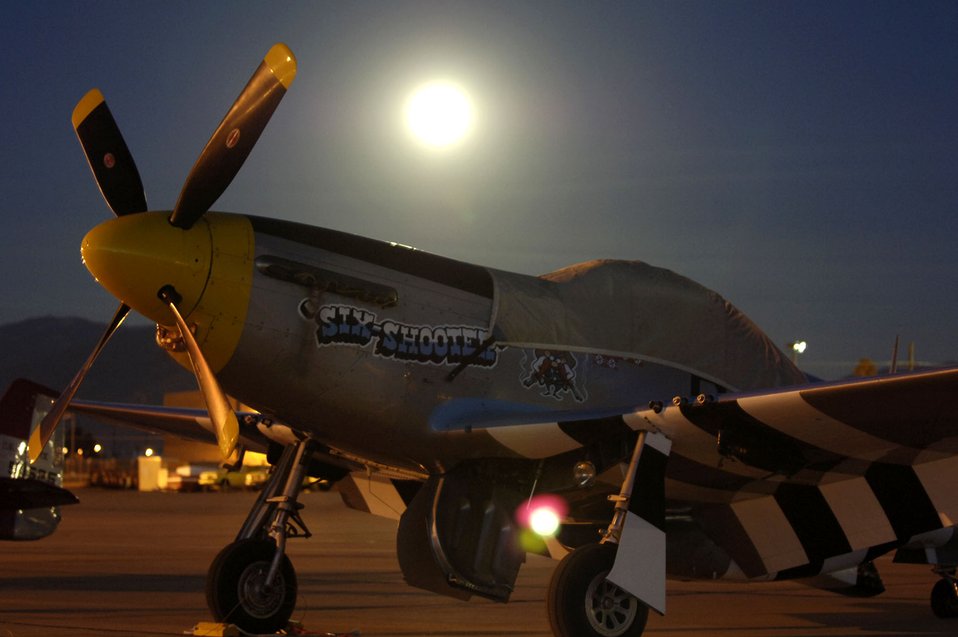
Heritage Conference mixes old with new

A P-51 Mustang spends the night on the flight line at David-Monthan Air Force Base, Ariz., March 3 during the 2007 Heritage Conference. The conference provides an opportunity for Air Combat Command demonstration pilots to train together with modern and historic military aircraft in preparation for the upcoming air-show season.